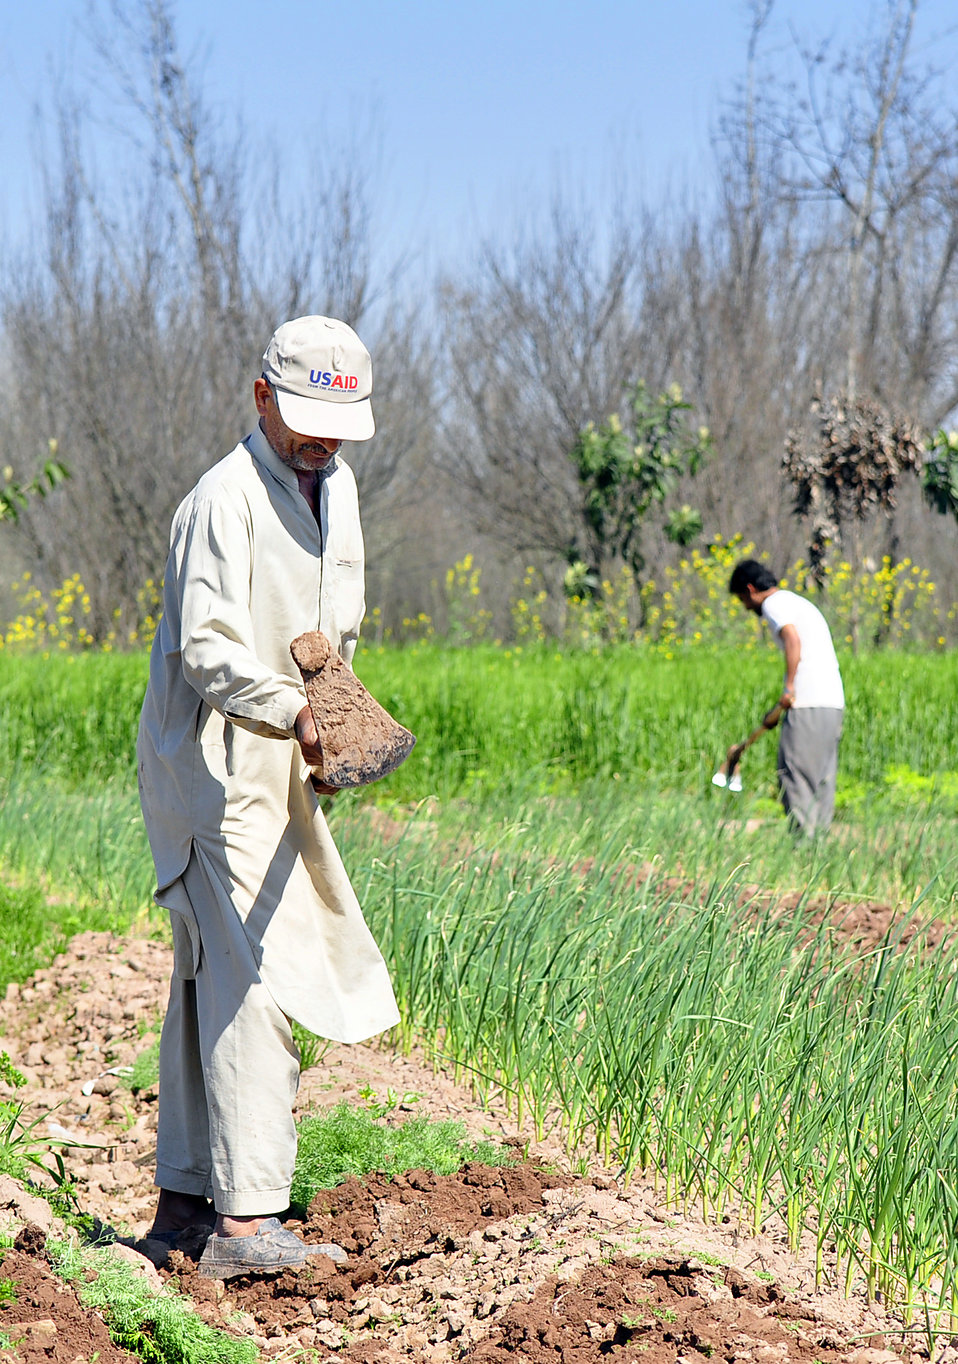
2011 March: USAID's Agricultural Recovery Program in 22 districts of Khyber Pakhtunkhwa, Punjab and Balochistan is an excellent example of the impact US development assistance can have. We have helped more than 500,000 farmers salvage the winter planting season and livestock after the floods. As a result, wheat farmers have nearly doubled their harvests. More than 5 million people have benefited. These photos show progress of the USAID Agricultural Recovery Project in Khyber Pakhtunkhwa.